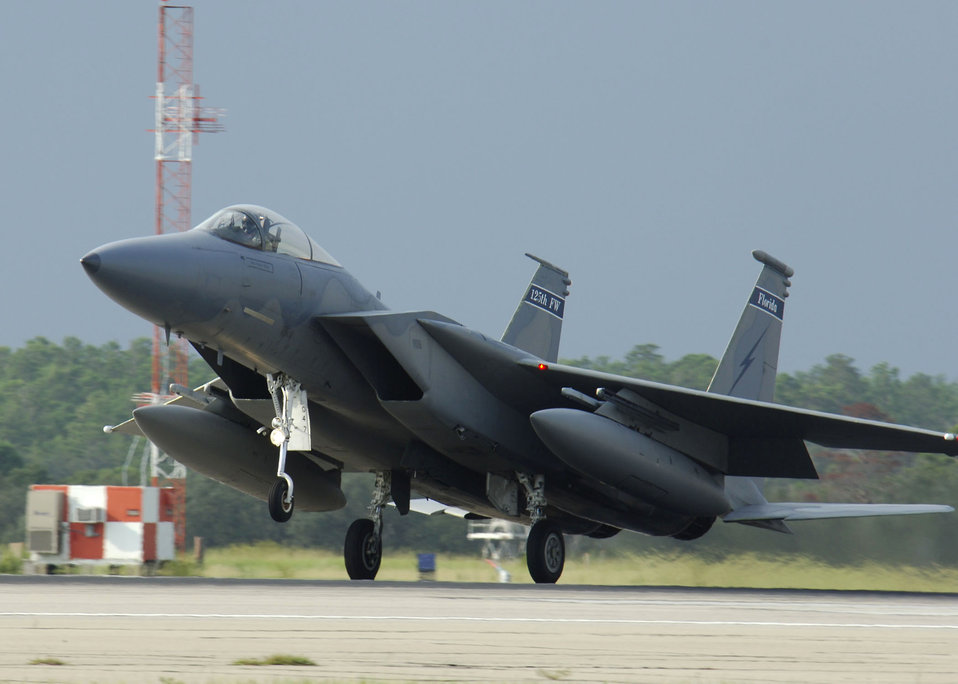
Ernesto evacuation

One of seven F-15 Eagles from the Florida Air National Guard's 125th Fighter Wing arrives at Eglin Air Force Base, Fla., Aug. 29. The aircraft were evacuated from Jacksonville International Airport because of Tropical Storm Ernesto.